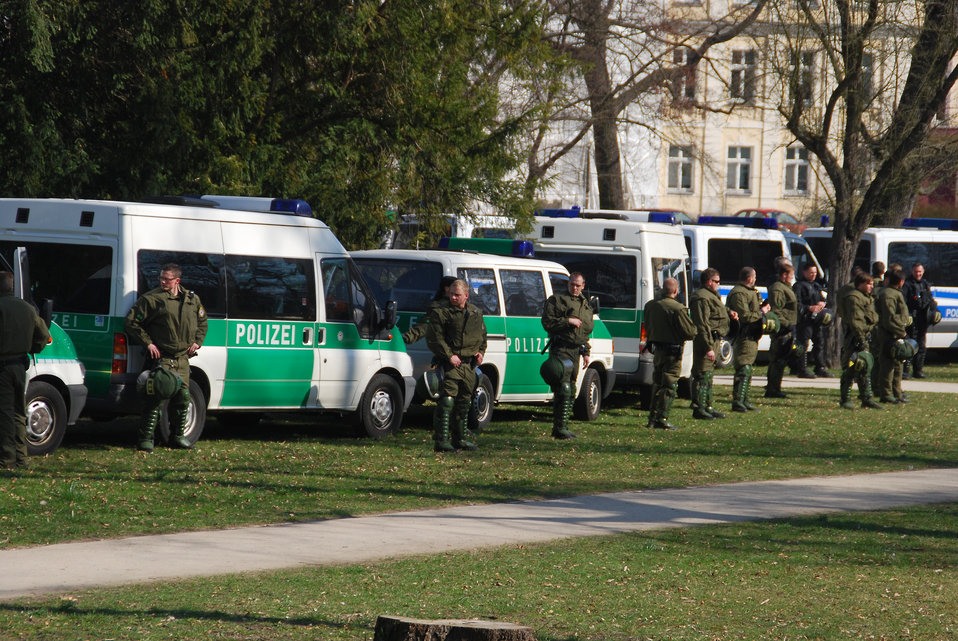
Proteste gegen den Nazi-Aufmarsch am 24.3.2012 in Frankfurt (Oder)